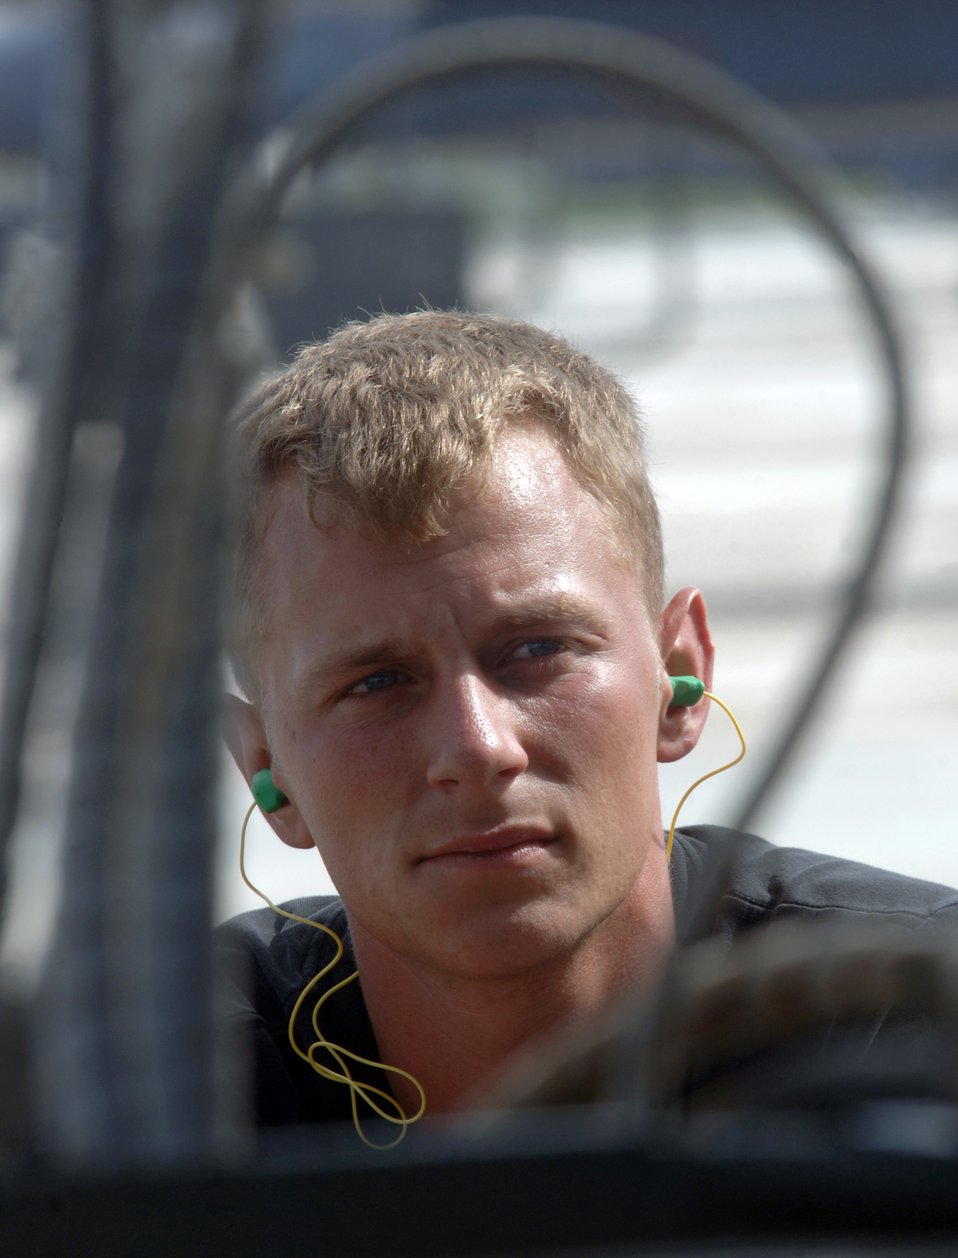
Lancer maintenance

ANDERSEN AIR FORCE BASE, Guam (AFPN) -- Senior Airman James Underhill operates a